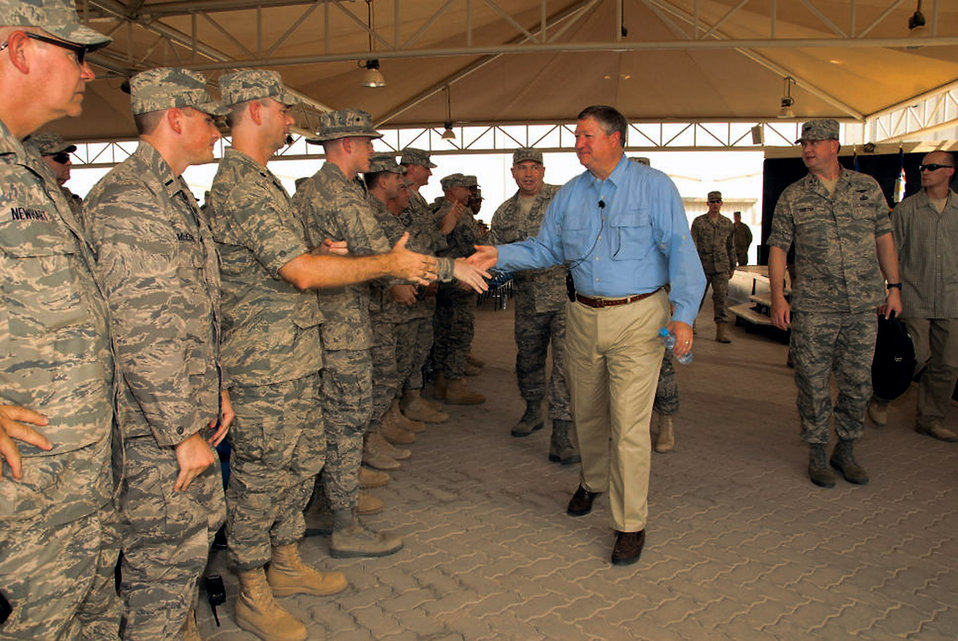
SECAF gains insight into diverse missions at deployed wing

Secretary of the Air Force Michael B. Donley shakes the hands of several Airmen from the 380th Air Expeditionary Wing at an air base in Southwest Asia Oct. 12. The secretary visited the 380th Air Expeditionary Wing to gain a better understanding of the infrastructure and capabilities of one the smallest but most diverse bases in the Air Forces Central area of responsibility.